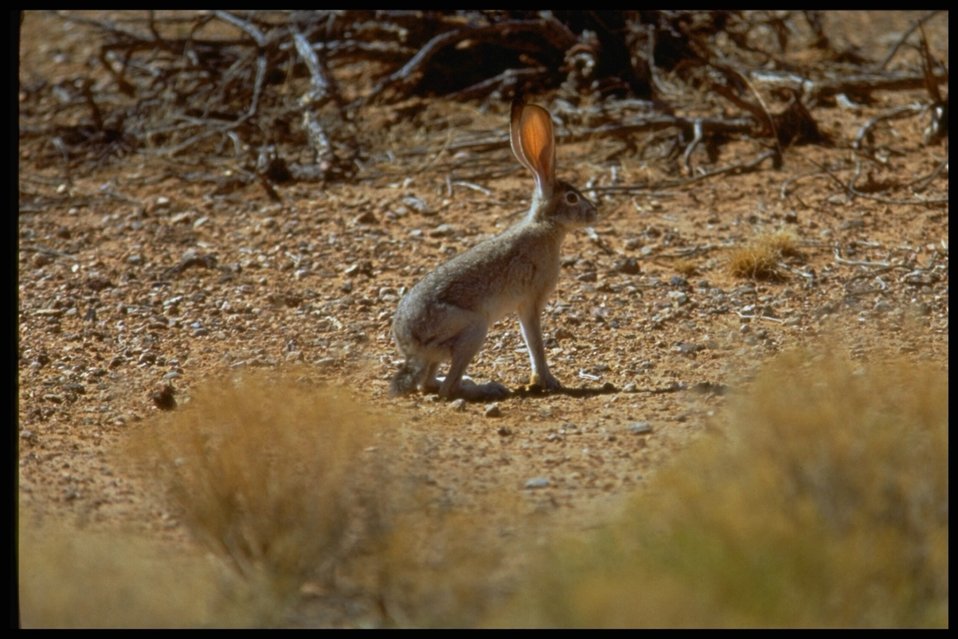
Jackrabbit in the Arizona desert.